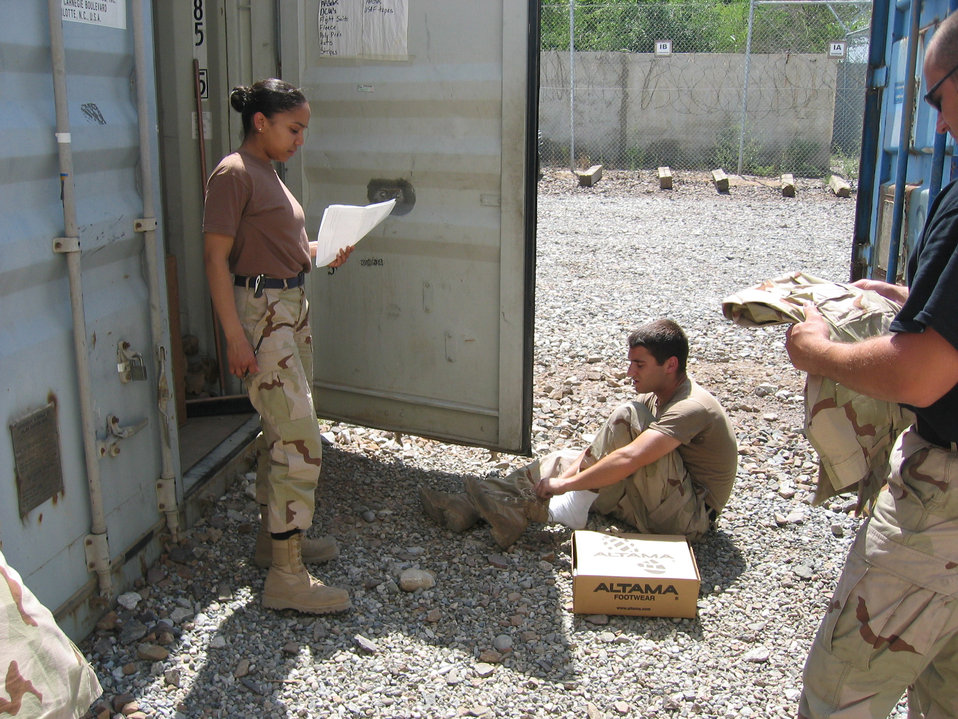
Supply Airmen keep deployed essentials on shelf

KARSHI-KHANABAD AIR BASE, Uzbekistan -- Airman 1st Class Diana Ortiz issues new boots to an Airman here. She is a supply management apprentice with the 416th Expeditionary Mission Support Squadron's supply section and is deployed from Royal Air Force Mildenhall, England.